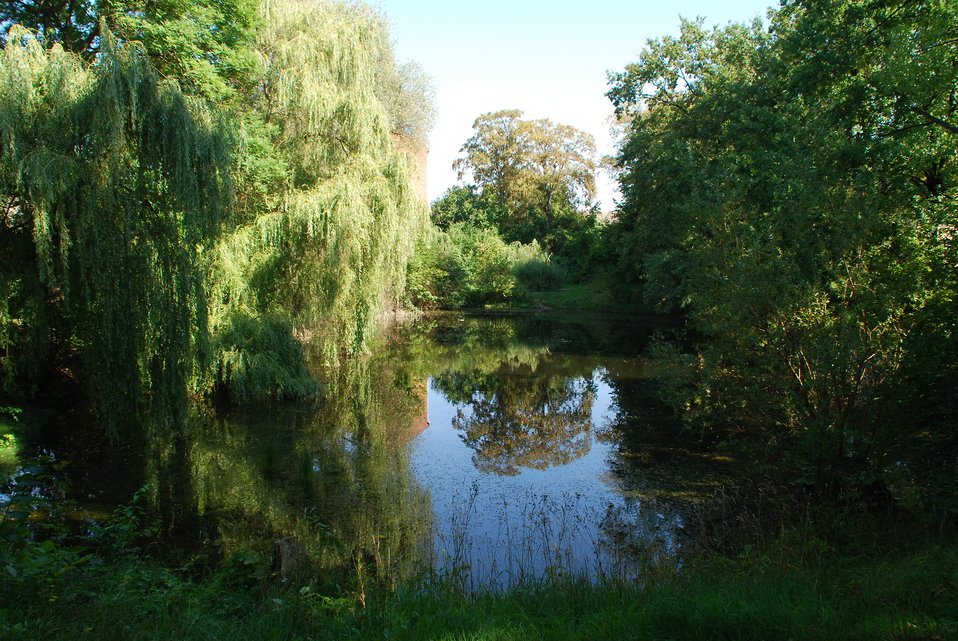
Theaterteich in Frankfurt (Oder), am ehemaligen Kleist-Theater, Friedrich-Ebert-Straße